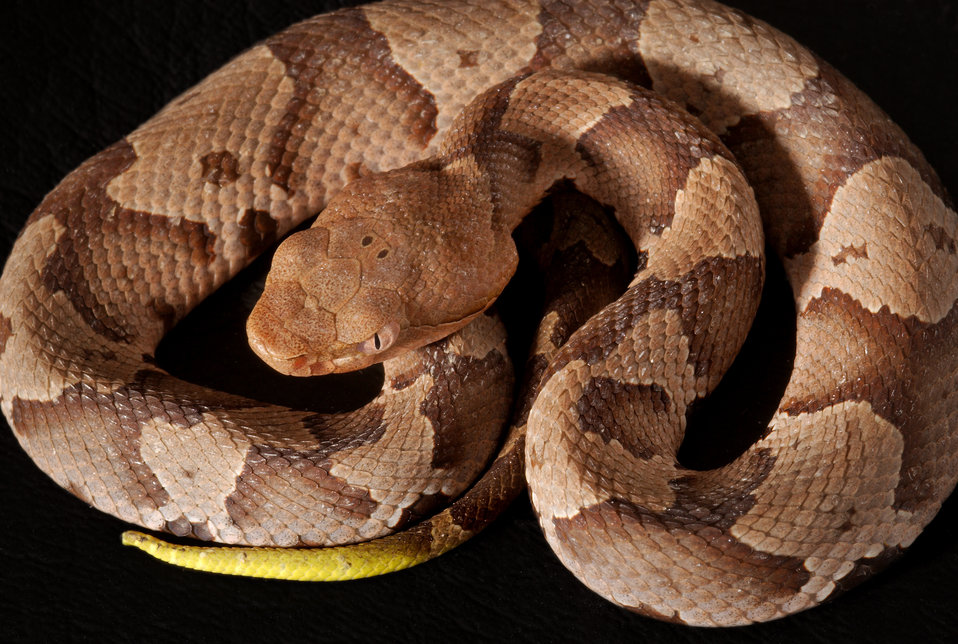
This 2008 photograph depicted a juvenile venomous 'Southern copperhead' snake, Agkistrodon contortrix, as it was coiled in a Decatur, Georgia basement.